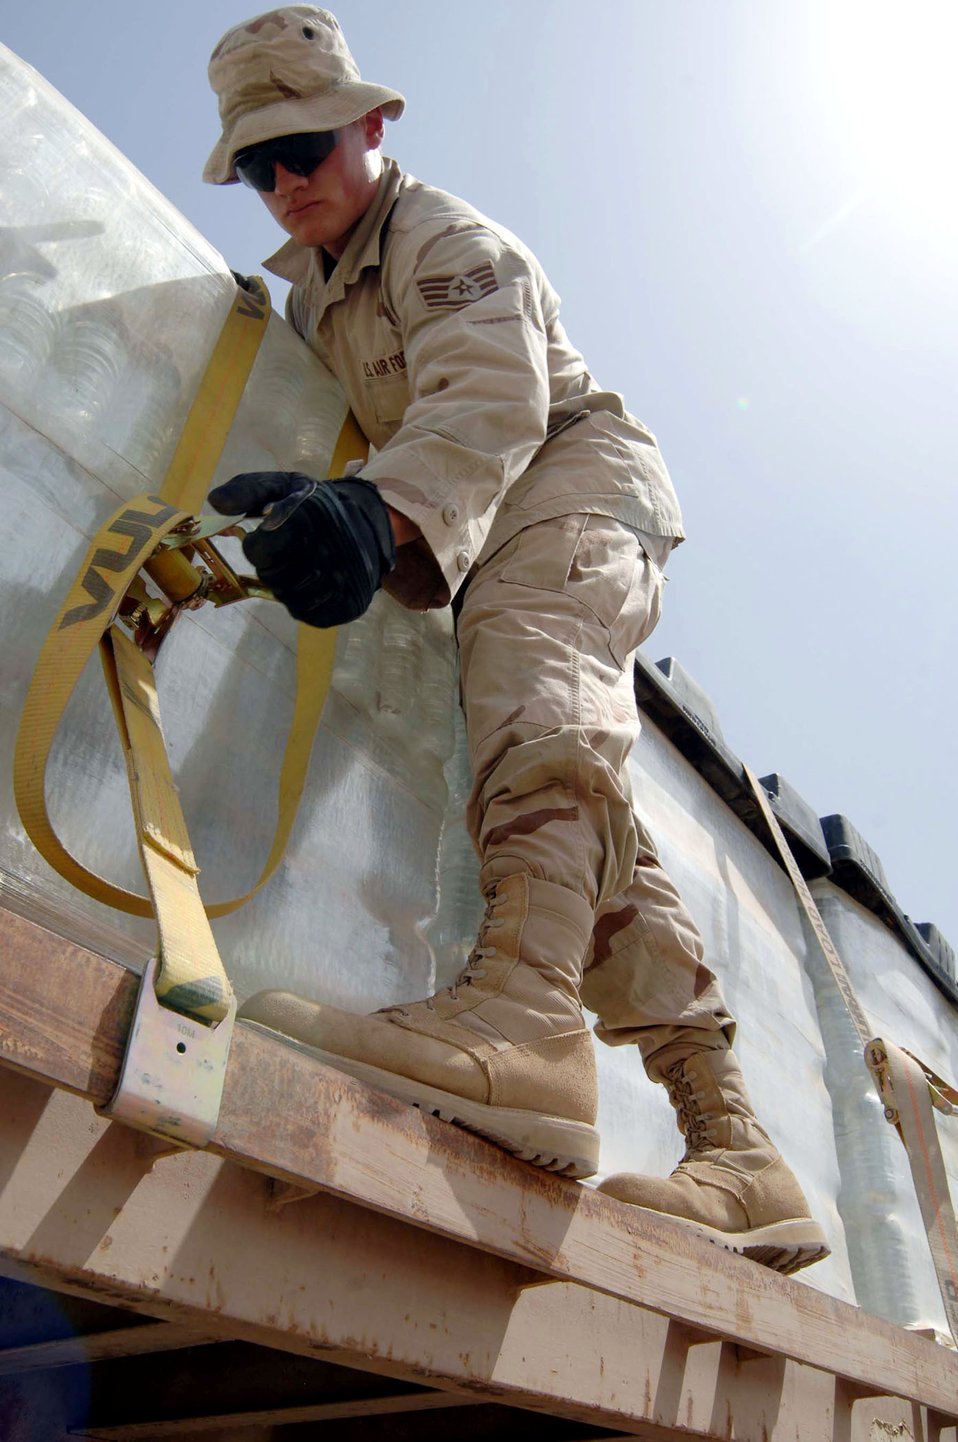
Drink up: Tigris River is life for troops in Baghdad

Staff Sgt. Richard Ball tightens a tie-down strap used to secure palletized water for transport from Camp Liberty to Sather Air Base, Iraq. Sergeant Ball is assigned to the 447th Expeditionary Logistics Readiness Squadron.